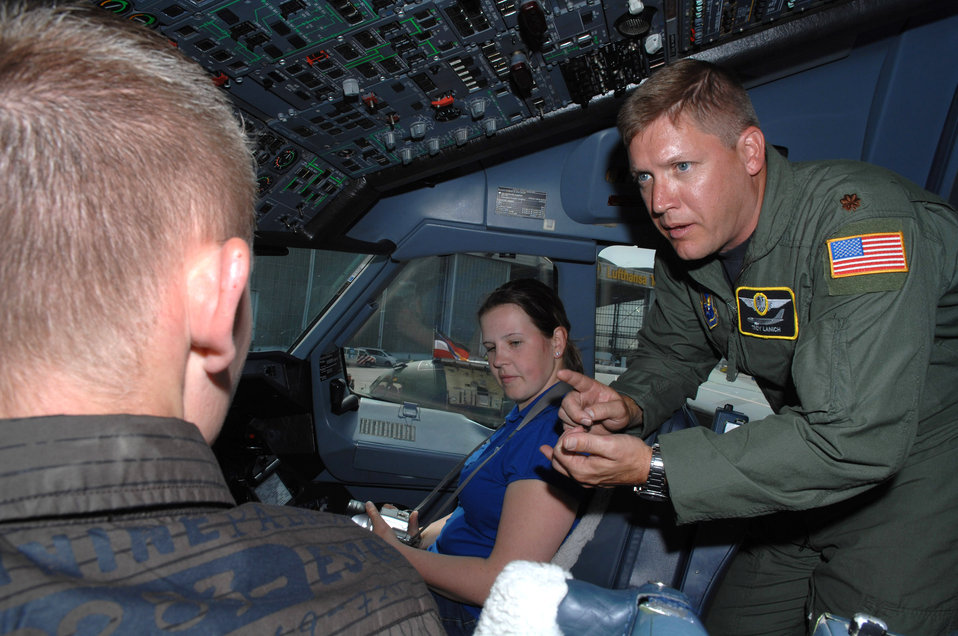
US-German exchange pilots showcase interoperability

Maj. Troy Lanich tells Berlin Airshow attendees about the Airbus 310 aircraft he flies while on the exchange pilot program May 29. Major Lanich has been assigned to the German air force Special Air Mission Wing for more than a year and is here at the airshow with the unit to showcase the aircraft.